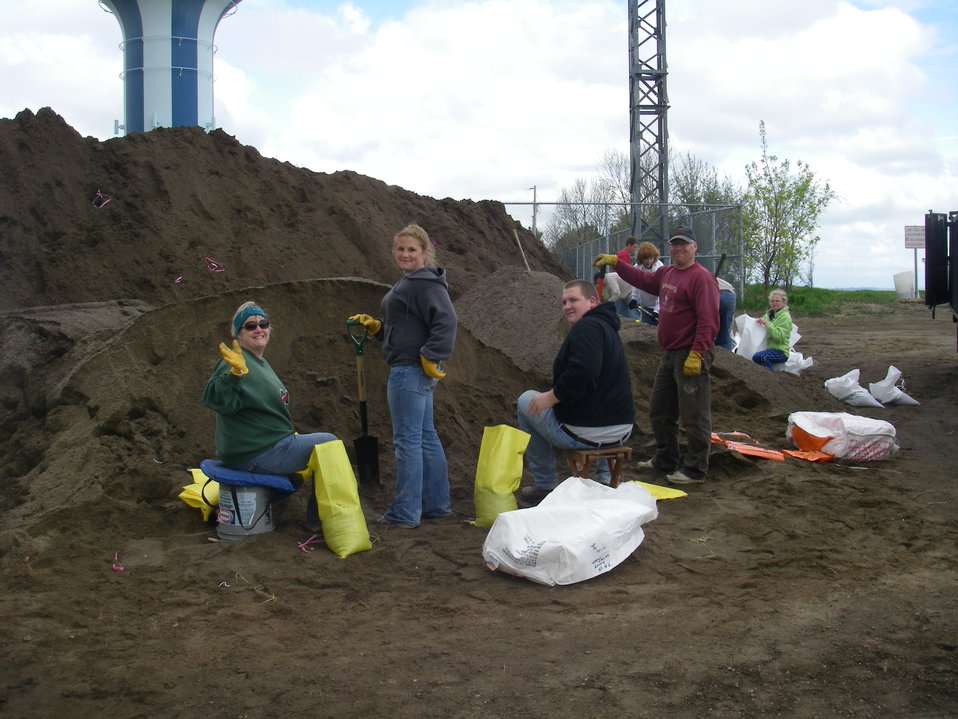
Volunteers Fill Sand Bags

As the Missouri River continues to rise, the U.S. Fish and Wildlife Service and other partners volunteer to fill sand bags and take other preemptive measures to protect lives and property below Garrison Dam in the Bismarck/Mandan area in North Dakota. With planned releases from the dam expected to nearly double the river’s flow in the next two weeks, more flooding is expected.